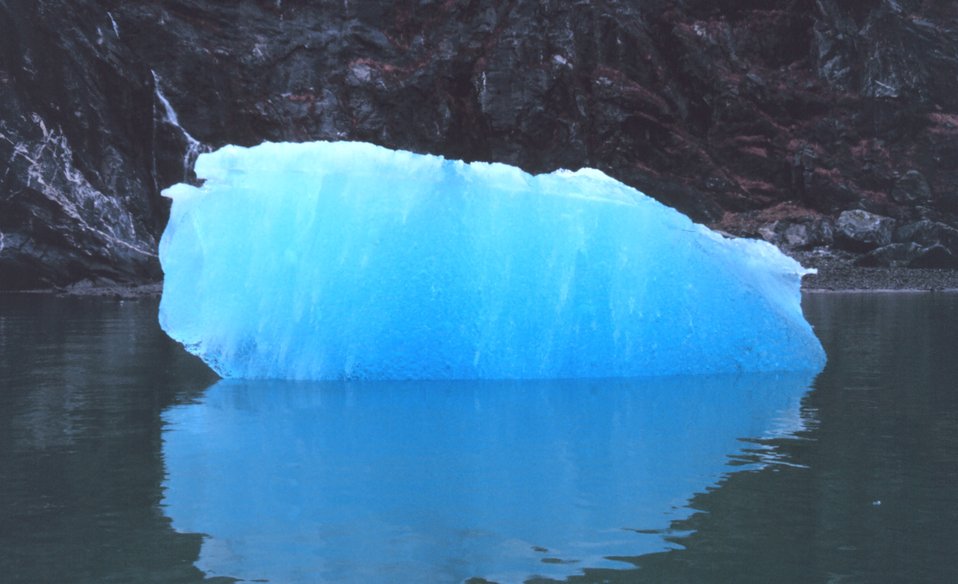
A bergy bit floating quietly in Tracy Arm Fjord